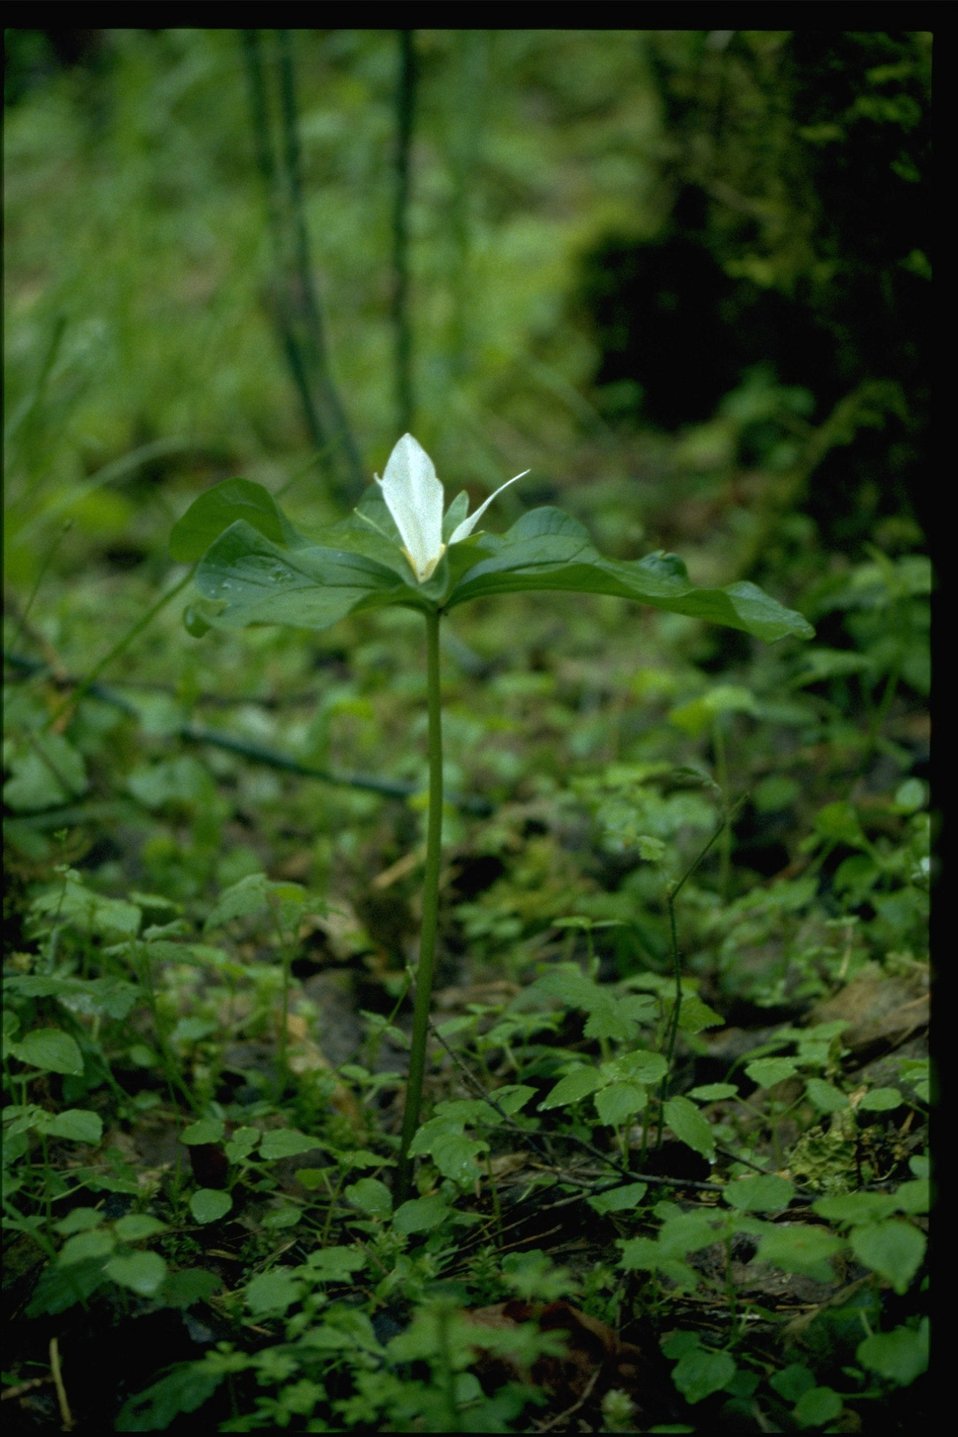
Medium shot of Trillium ovatum.